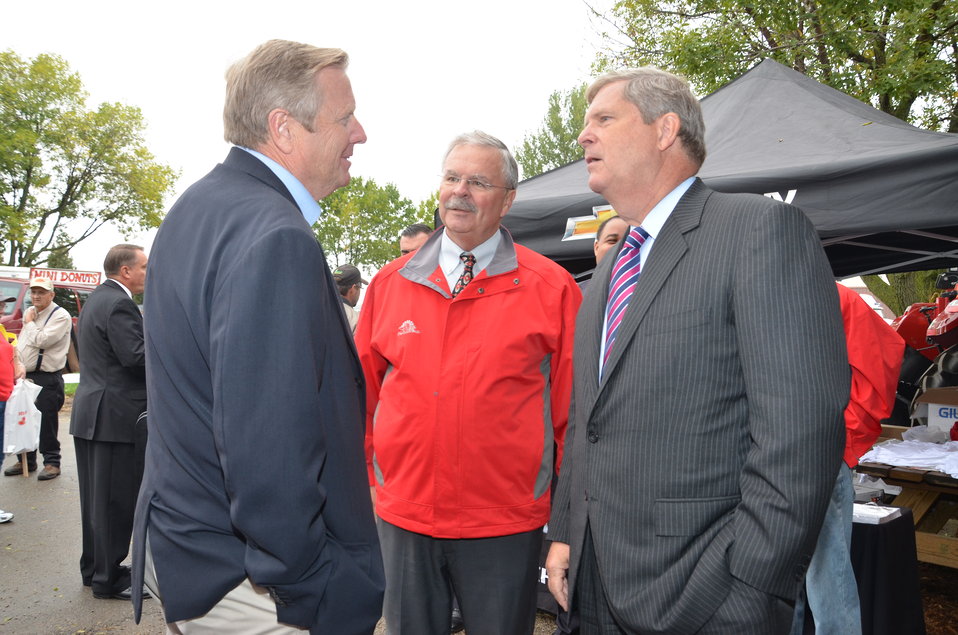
(Lto R) Ohio Department of Natural Resources Director Jim Zehringer, Executive Vice President of Ohio Farm Bureau Federation Jack Fisher and Agriculture Secretary Thomas Vilsack visit at the Ohio Farm Bureau exhibit building before today's Vice President's Luncheon at the Farm Science Review, on Tuesday, September 18, 2012.